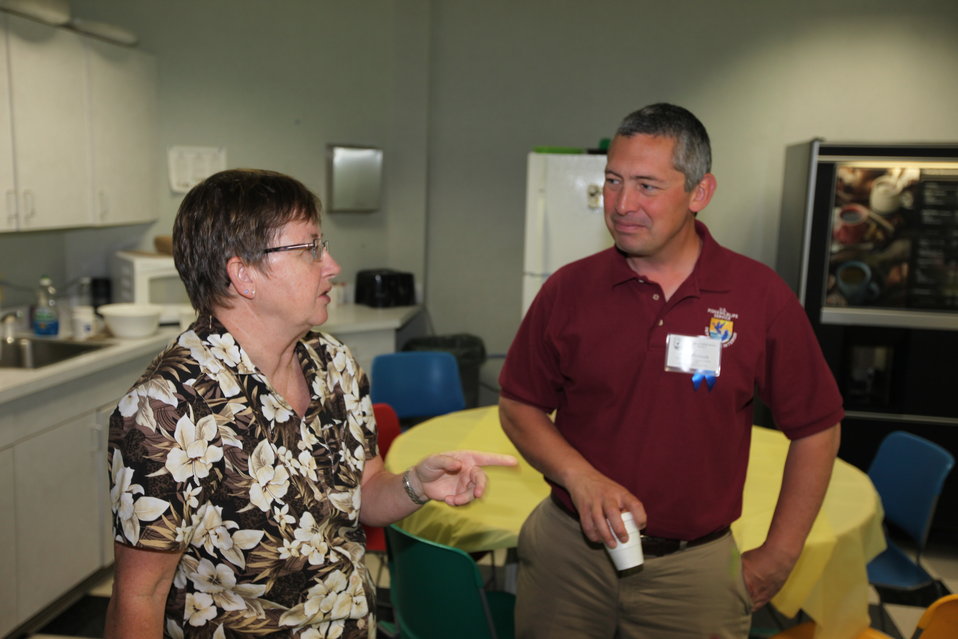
Northeast Region Employee Appreciation Awards

Sue McMahon and Matt Whitbeck